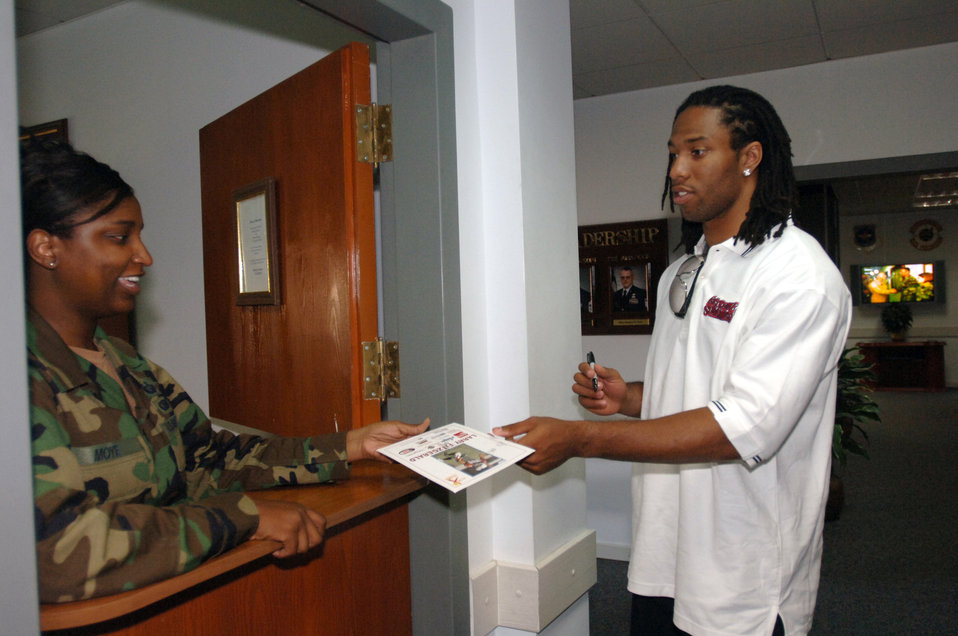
Arizona Cardinal visits Incirlik

Master Sergeant Cheryl Moye receives an autograph from Arizona Cardinals wide receiver Larry Fitzgerald during his tour of Incirlik Air Base, Turkey, on Wednesday, June 21. Sergeant Moye is assigned to the 728th Air Mobility Squadron command support staff.